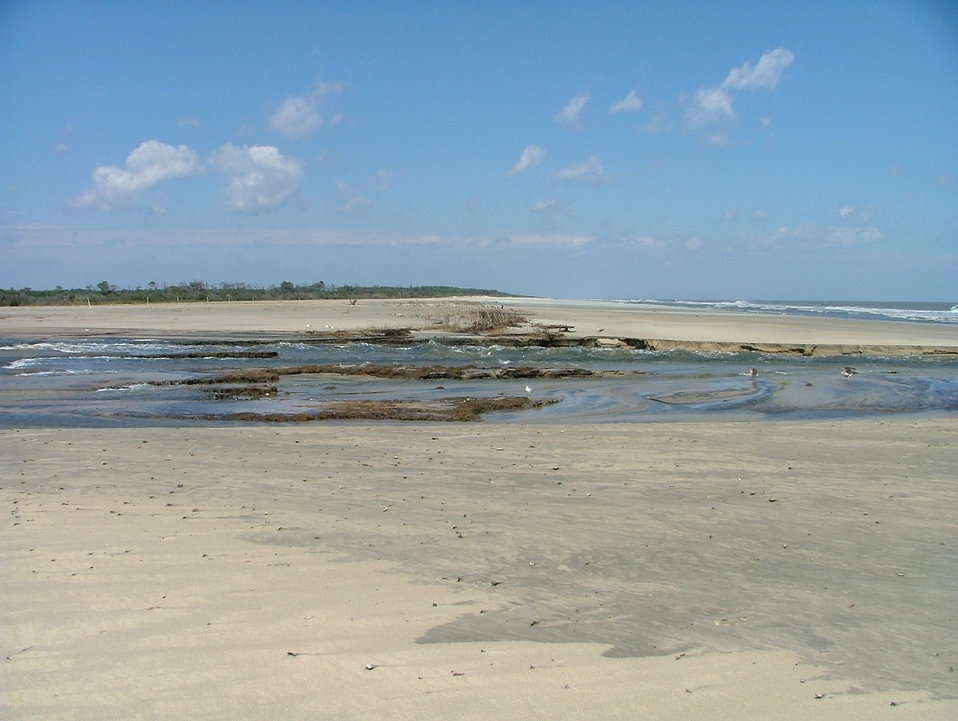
Breach at Swans Cove

Breach caused by Hurricane Irene at Swans Cove at Chincoteague National Wildlife Refuge in Virginia.